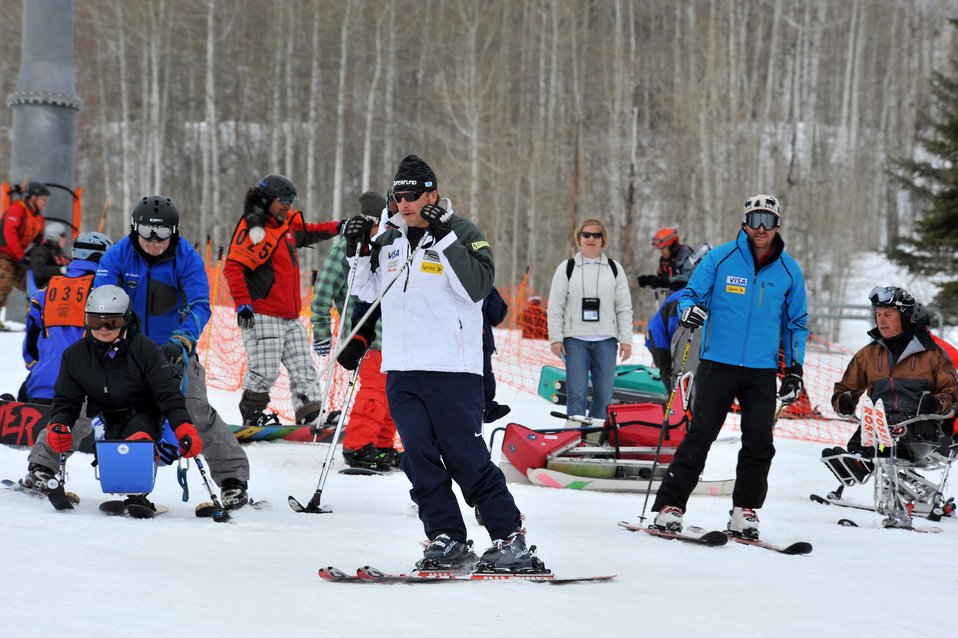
Assistant VA secretary, U.S. Olympians join veterans on ski slopes

Veterans Tammy Duckworth, Sean Halsted, Jim Martinson and John Register ski with Bode Miller, Casey Puckett and Andy Finch during the 24th National Disabled American Veterans Winter Sports Clinic March 31, 2010, in Snowmass Village, Colo. Bode is an Olympic Gold Medalist, Puckett is an Olympian and Finch is an Olympian snowboarder. Mrs. Duckworth is the assistant secretary of Veterans Affairs. Mr. Halsted is an Air Force veteran and a U.S. Paralympian. The event is sponsored by the Department of Veterans Affairs and Disabled American Veterans.